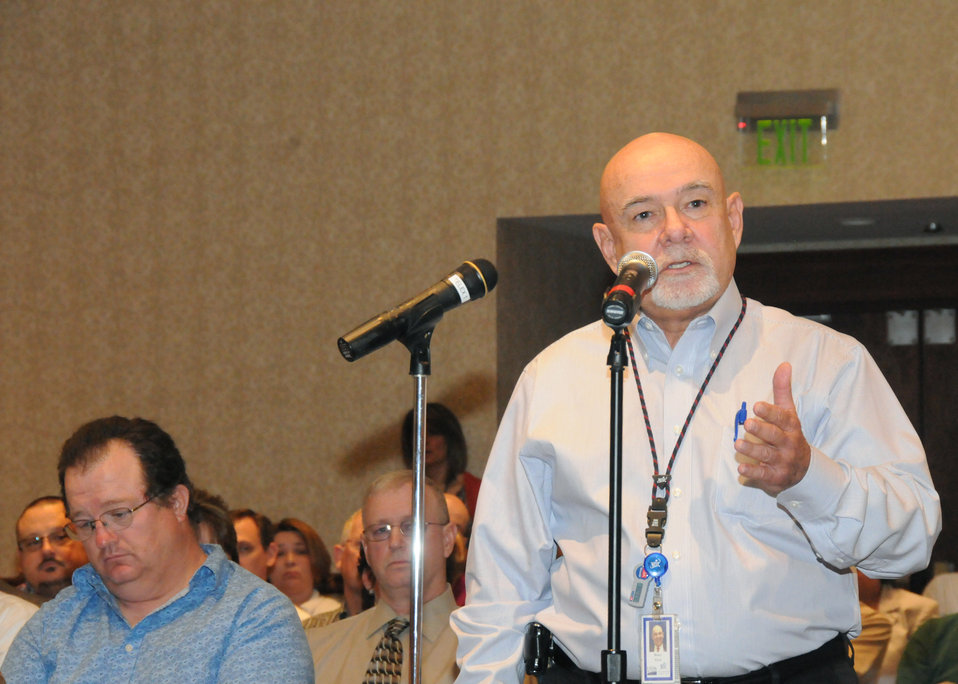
The U.S. Department of Agriculture (USDA) held the third of six Cultural Transformation Employee listening sessions in Kansas City, MO, on Wednesday, April 14, 2010. USDA employees expressed their concerns with issues at the Department and made suggestions for correcting them and improving the image of USDA. USDA photo 10di1309-183.